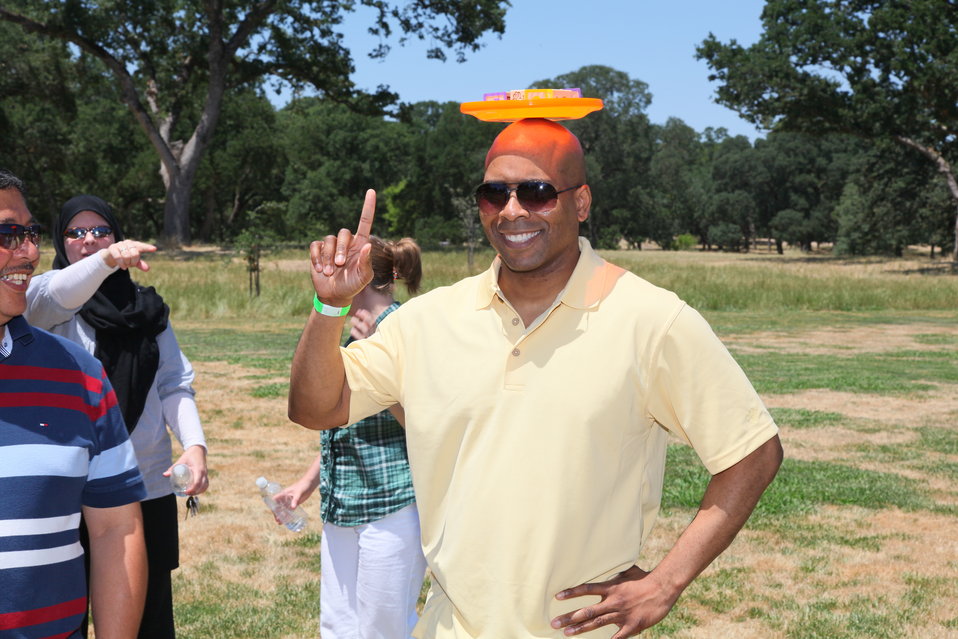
2011 Annual Picnic